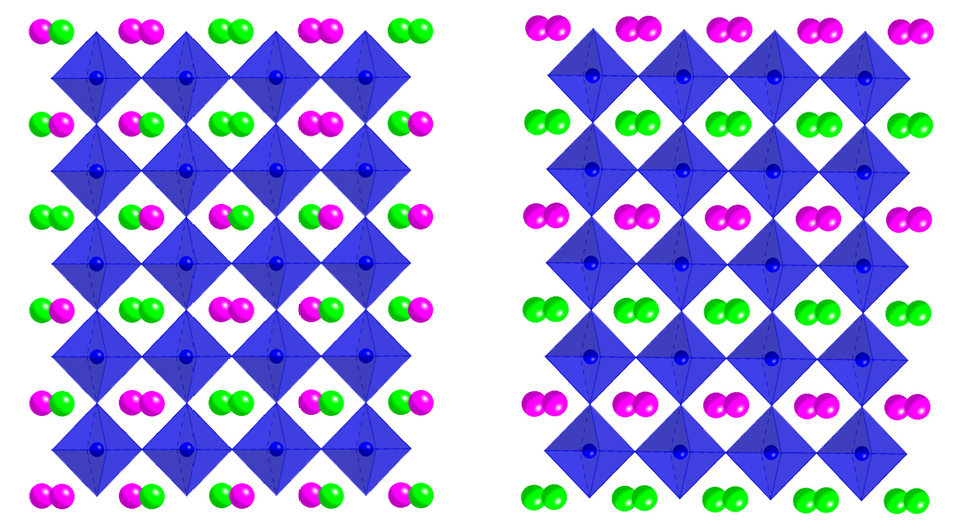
NIST Measures Key Property of Potential 'Spintronic' Material

Manganite oxide lattices (purple) doped with lanthanum (magenta) and strontium (green) have potential for use in spintronic memory devices, but their usual disorderly arrangement (left) makes it difficult to explore their properties. The ANL/NIST team's use of a novel orderly lattice (right) allowed them to measure some of the material's fundamental characteristics.

See also www.nist.gov/ncnr/spintronic-101911.cfm.

Credit: Credit: Argonne National Laboratory